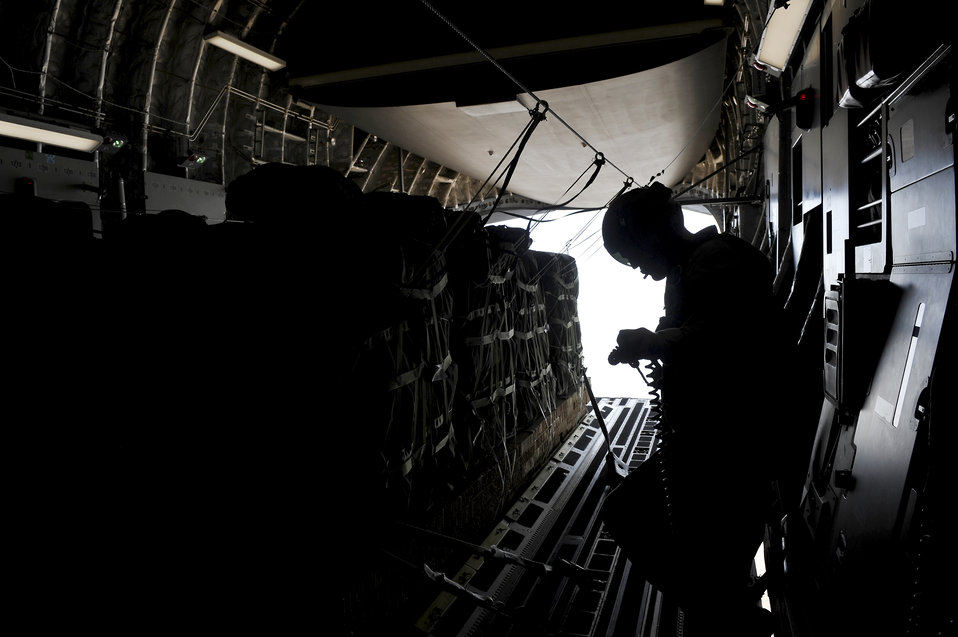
Mobility Airmen continue to deliver for warfighters

A loadmaster from the 816th Expeditionary Airlift Squadron waits for the signal to release container delivery system bundles from a C-17 Globemaster III Sept. 23, 2009, over Afghanistan. The bundles, full of supplies for Marines, will be dropped to a base in Afghanistan.